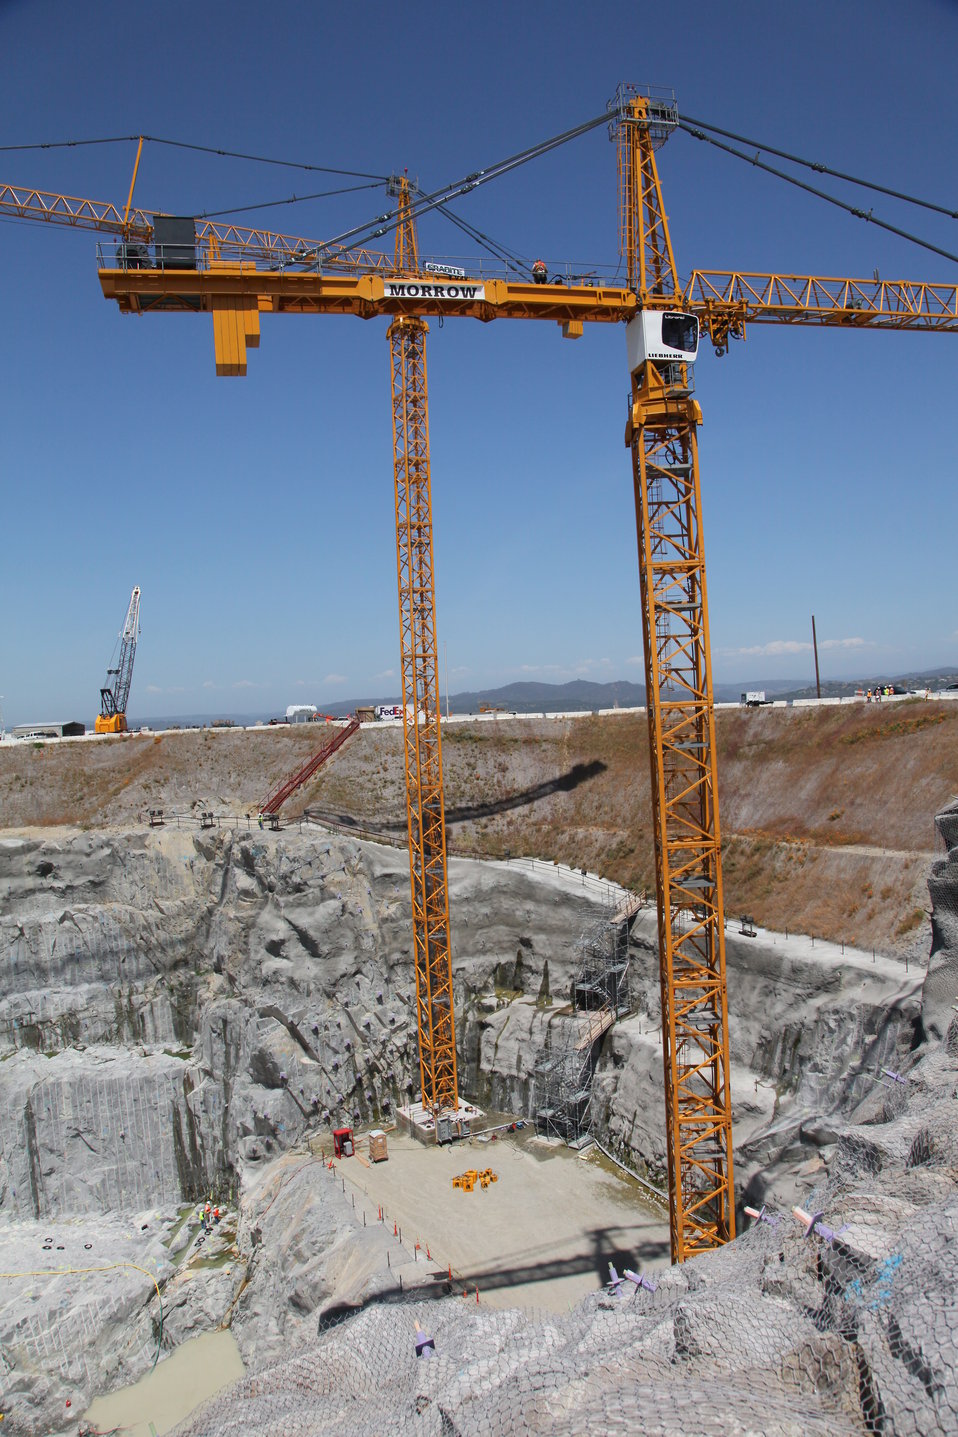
Cranes erected at the Folsom auxiliary spillway

Two tower cranes, erected by contractors for the U.S. Army Corps of Engineers Sacramento District, stand inside the construction site for the Folsom Dam auxiliary spillway in Folsom, Calif., May 10, 2012. A total of three cranes will be used in lifting form work, rebar and concrete in constructing the spillway starting later in May. The Sacramento District has shifted its focus to construction of the spillway's control structure, which is essentially a second dam. The spillway is scheduled to be ready for use in 2017 and will allow Folsom Dam to release water sooner and more safely, helping reduce flood risk for the Sacramento region.